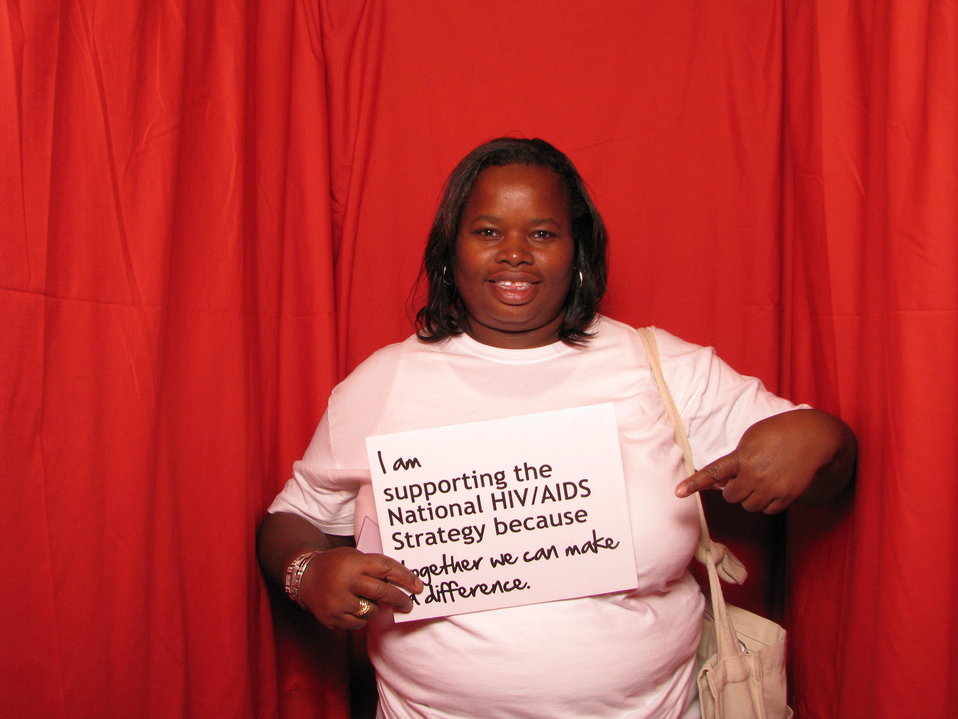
I am Supporting the National HIV/AIDS Strategy because Together We Can Make a Difference

From the AIDS.gov photo booth at the U.S. Conference on AIDS, September 2010 (Orlando, FL).